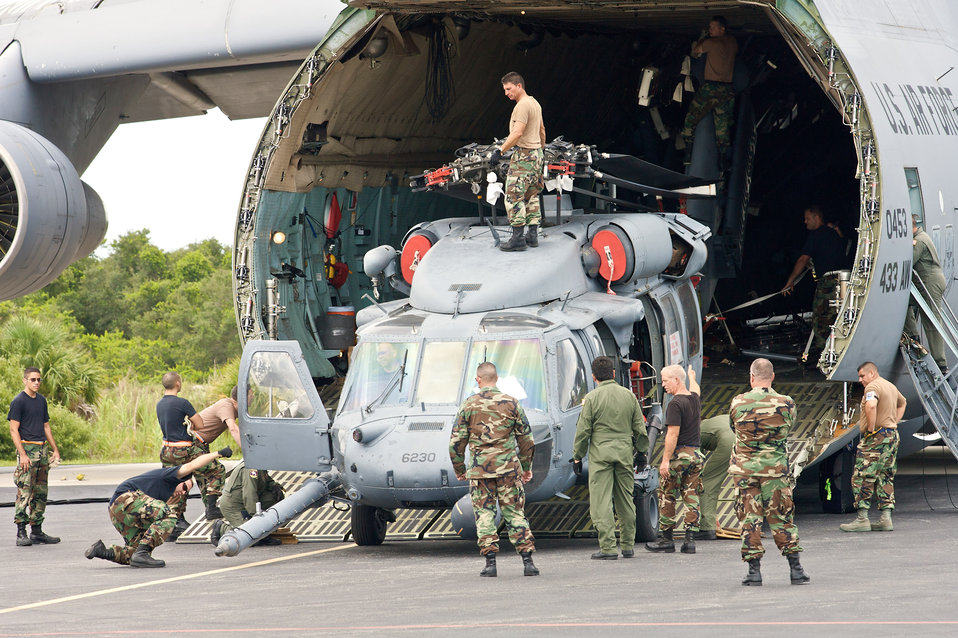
Air Force Reserve rescuers change role, still save lives in Afghanistan

Air Force reservists load two HH-60G Pave Hawk helicopters onto a C-5 Galaxy that will airlift the helicopters overseas. The reservists are from the 920th Rescue Wing at Patrick Air Force Base, Fla.